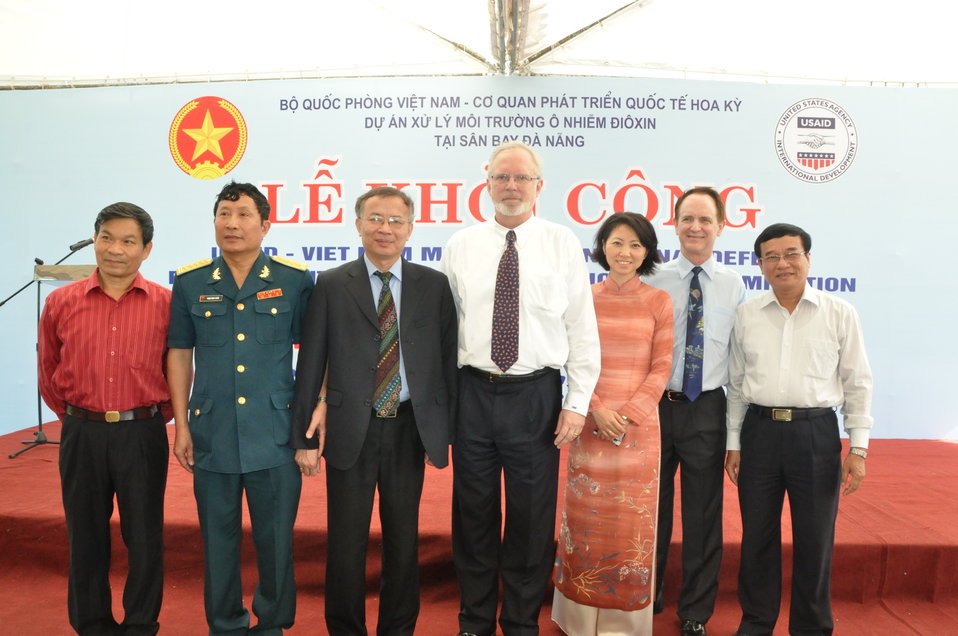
Vietnamese and U.S. Officials at the Environmental Remediation of Dioxin Contamination at Danang Airport Project Launch

Danang, August 9, 2012